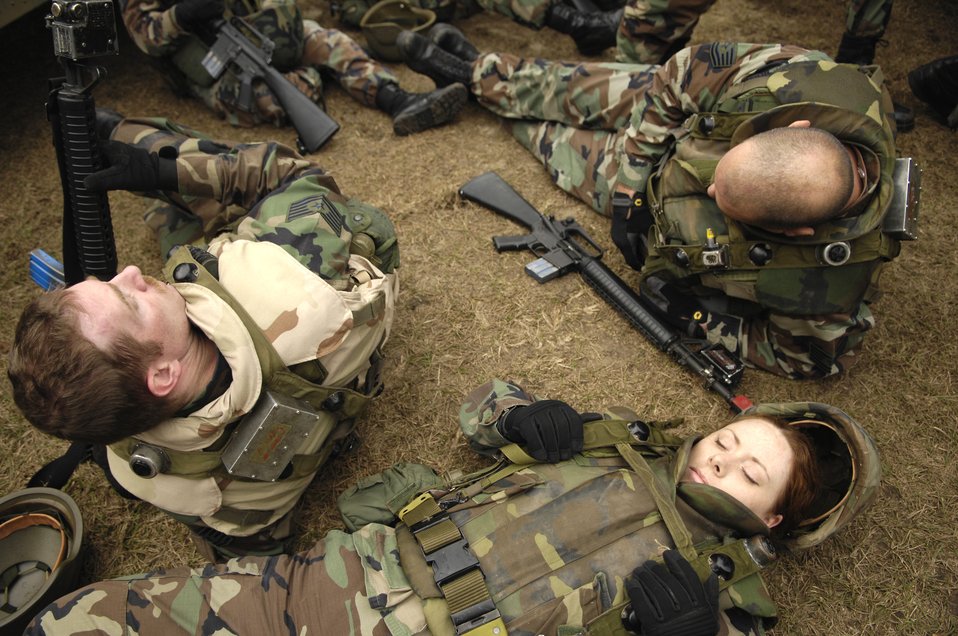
Testing their skills

Members of the 437th Airlift Wing take a break in between scenarios during the Expeditionary Combat Skills Training Dec. 7 at Charleston Air Force Base, S.C. The ECST is a three-day tactical operations course to prepare Charleston Airmen for deployment.